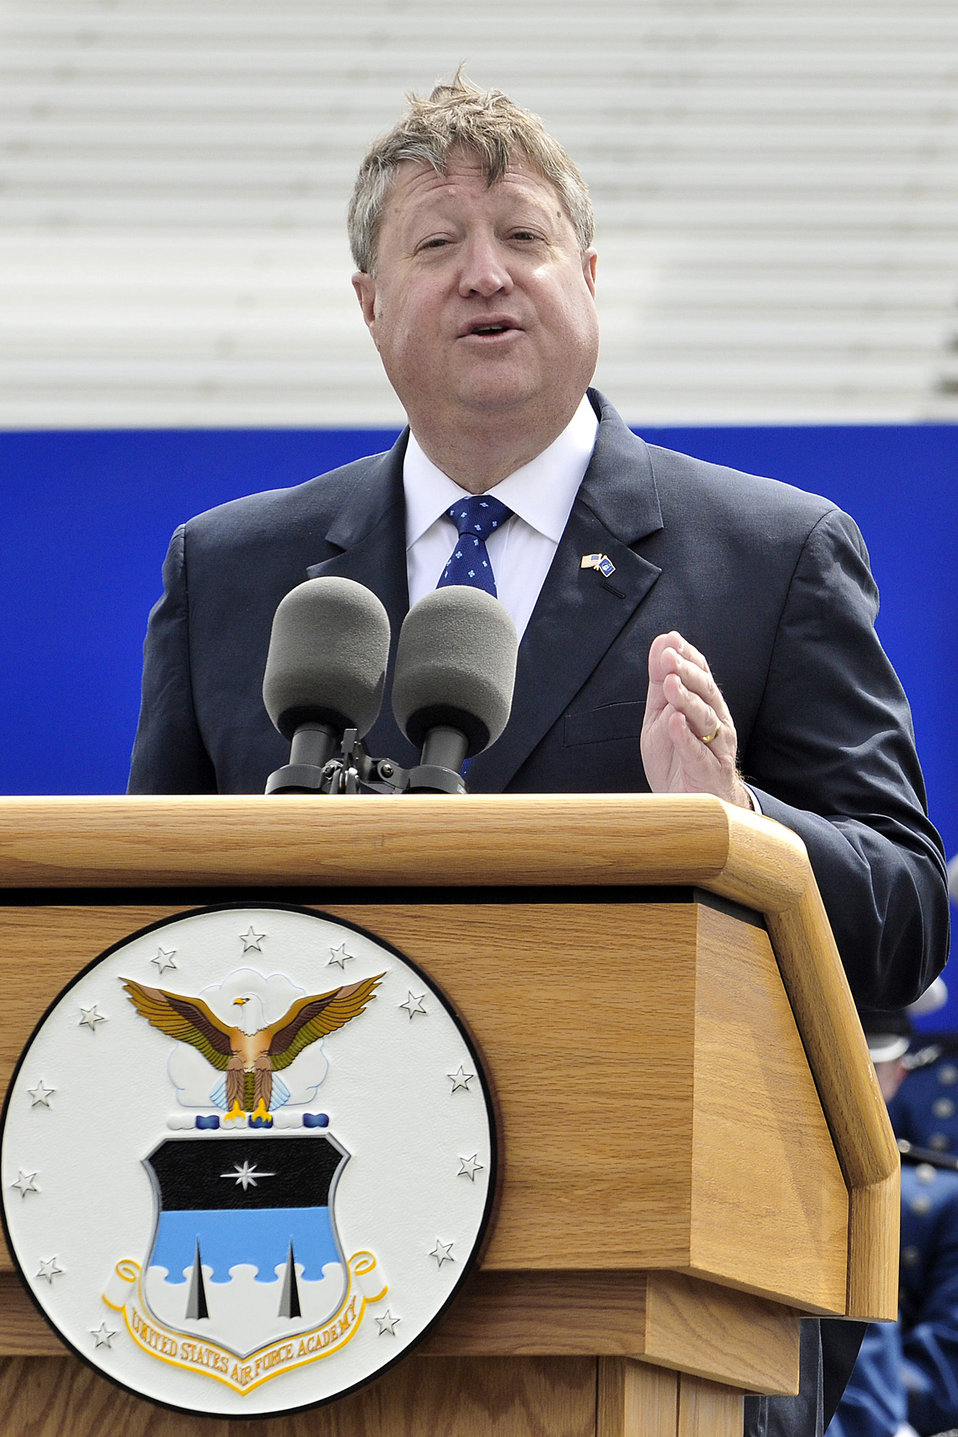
Academy class of 2011

Secretary of the Air Force Michael Donley delivers the commencement address to the Air Force Academy's Class of 2011, May 25, 2011, at Falcon Stadium in Colorado Springs, Colo. More than 1,000 cadets received their diplomas and commissions at the ceremony.